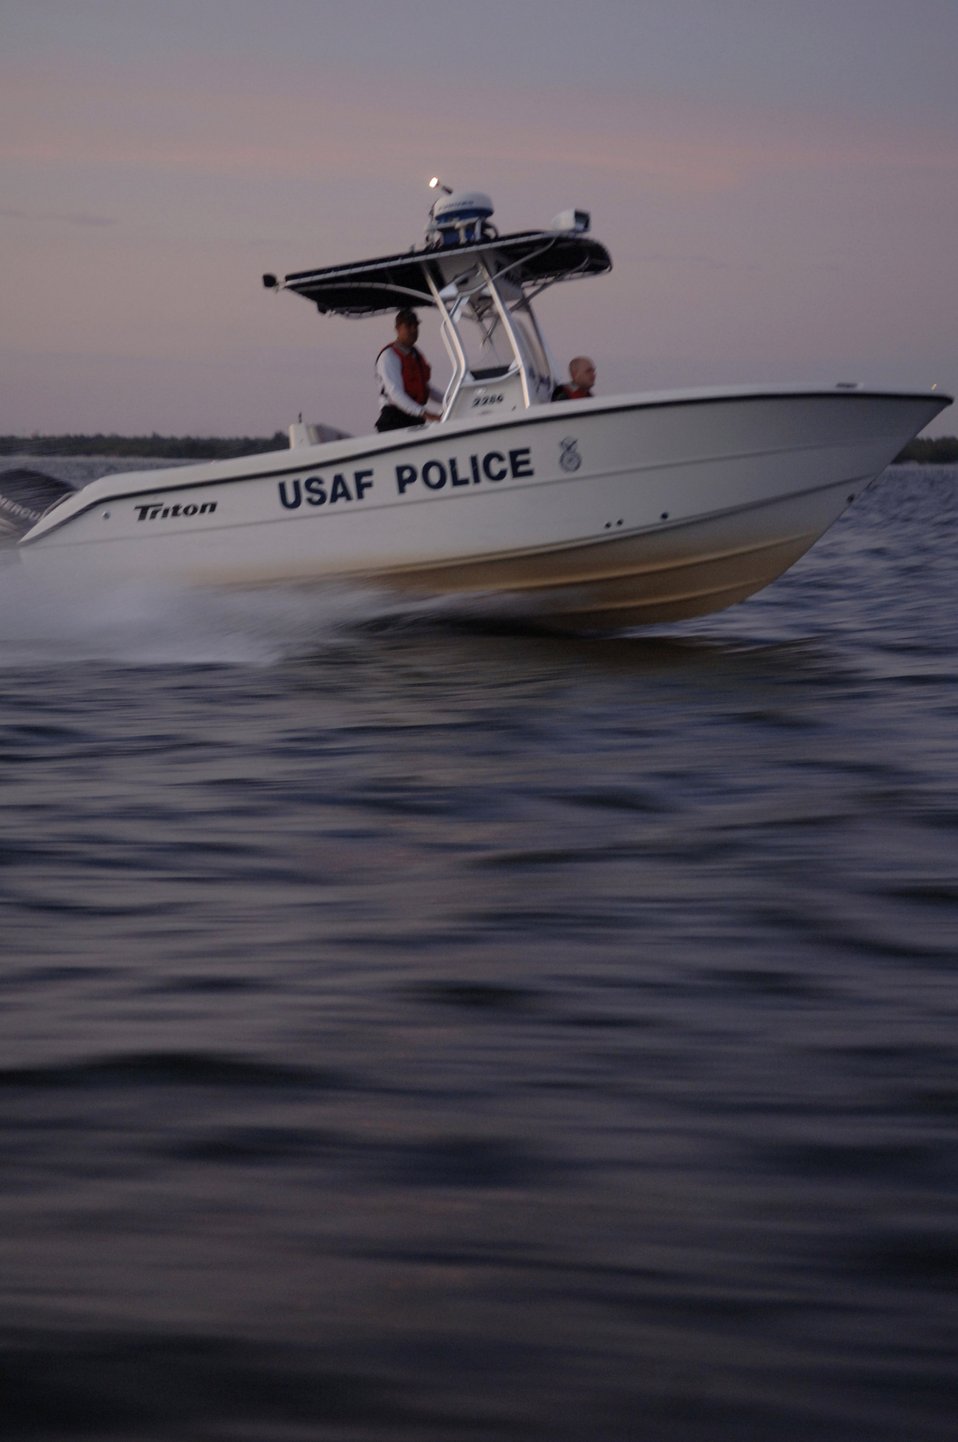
Bay watch

Members of the 6th Security Forces Squadron boat patrol at MacDill Air Force Base, Fla., police Tampa Bay Nov. 27. The 6th SFS is one of the few security forces squadrons in the Air Force to have a boat patrol and the only one to patrol overnight.